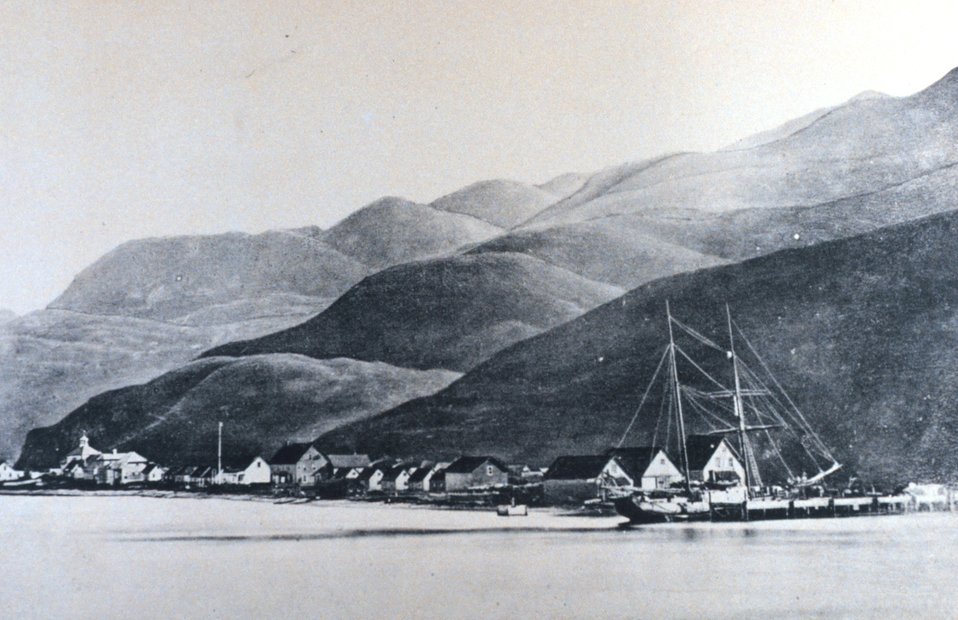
A view of Unalaska. The Russian Orthodox Church can be seen on the left of the photograph.